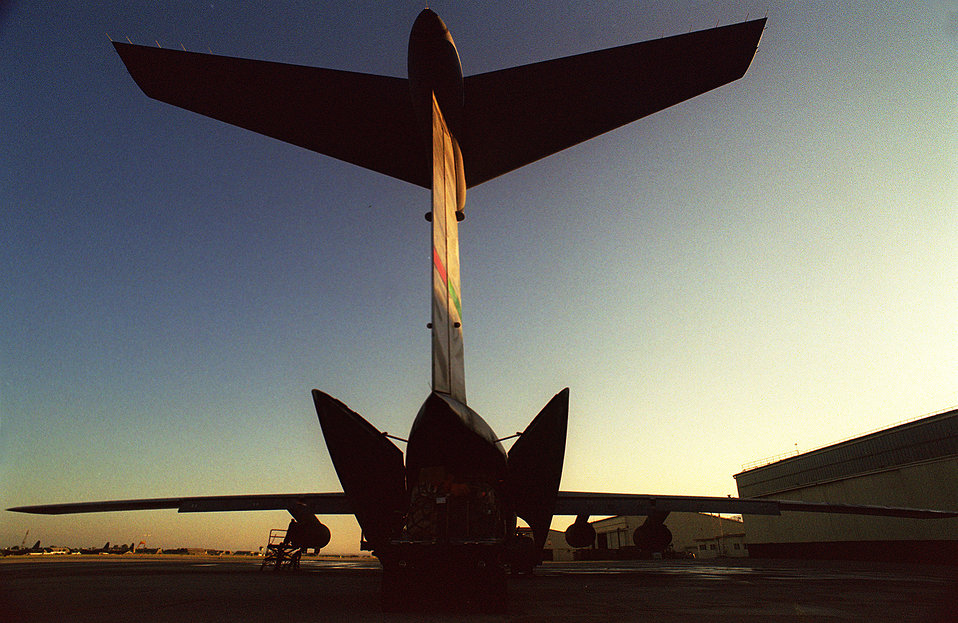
Loading the Globemaster

AVIANO AIR BASE, Italy --A C-141 Globemaster III from McChord Air Force Base, Wash., gets loaded hare. The C-141 is one of the aircraft supporting NATO Operation Allied Force.